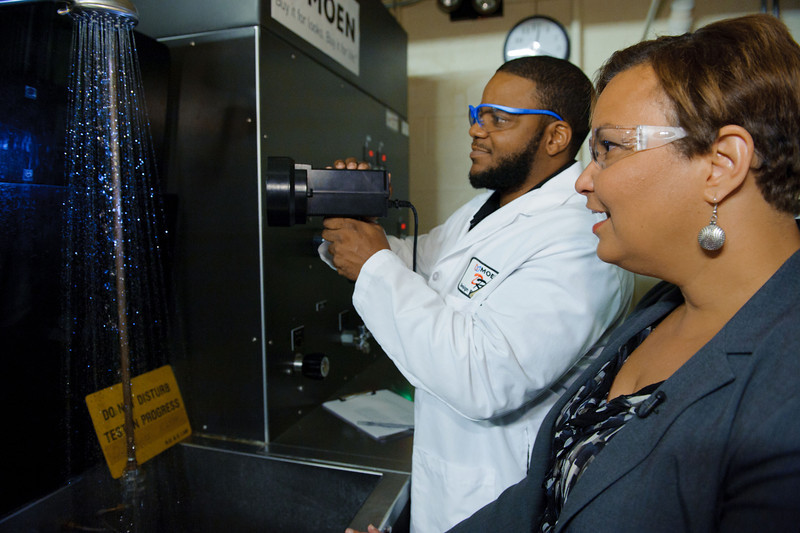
2011-06-17ClevelandBanner001-L

De Vaughn Cobbins, Senior Laboratory Technician for Moen uses a strobe light to illuminate flow patterns in shower stream.